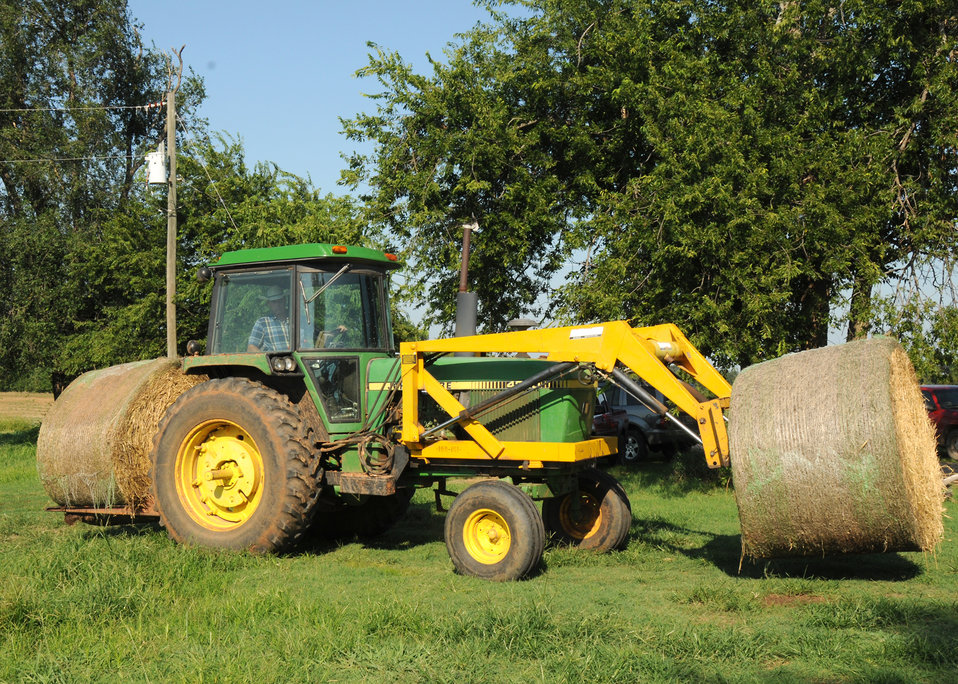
Steve Burris moves hay bales on his farm in McLoud, Oklahoma.